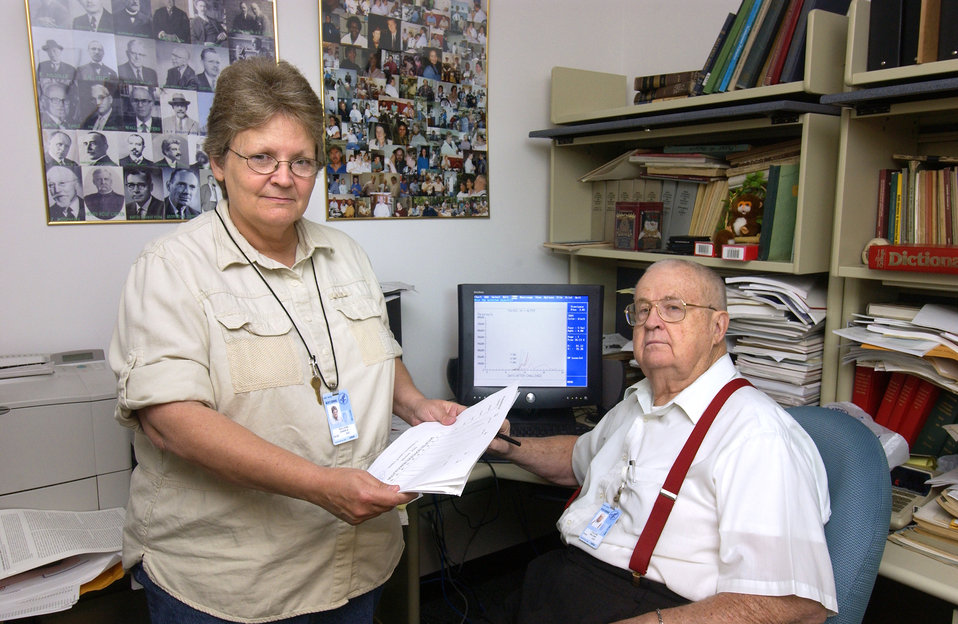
This 2004 photograph showed CDC's JoAnn Sullivan (left), and Dr. Bill Collins (right), two research biologists with the National Center for Infectious Diseases (NCID), Division of Parasitic Diseases (DPD).